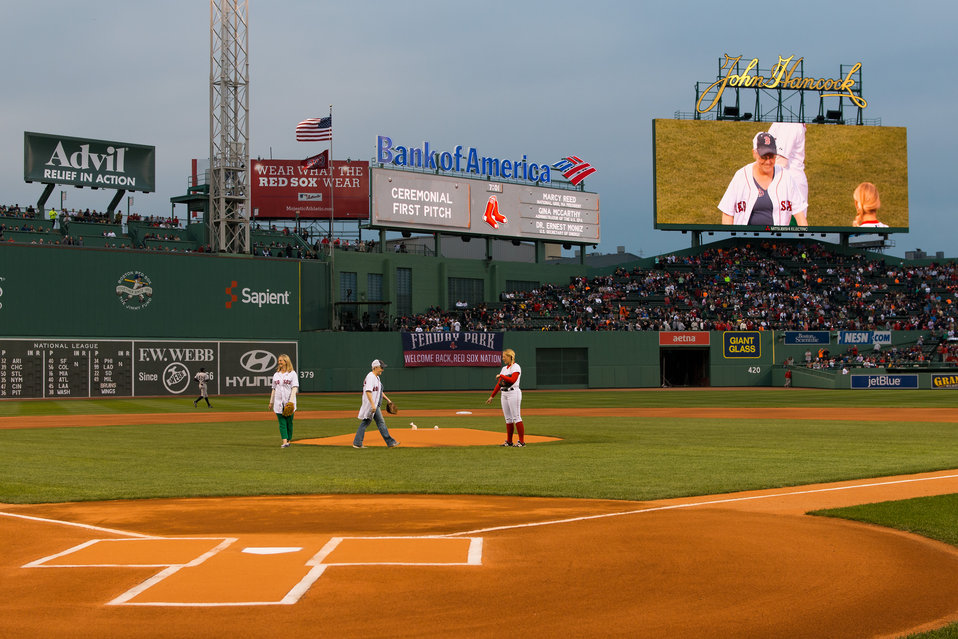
A Day In The Life of the EPA Administrator - April 22, 2014 7:01 pm

Taking the mound, with the famed Green Monster in the background.